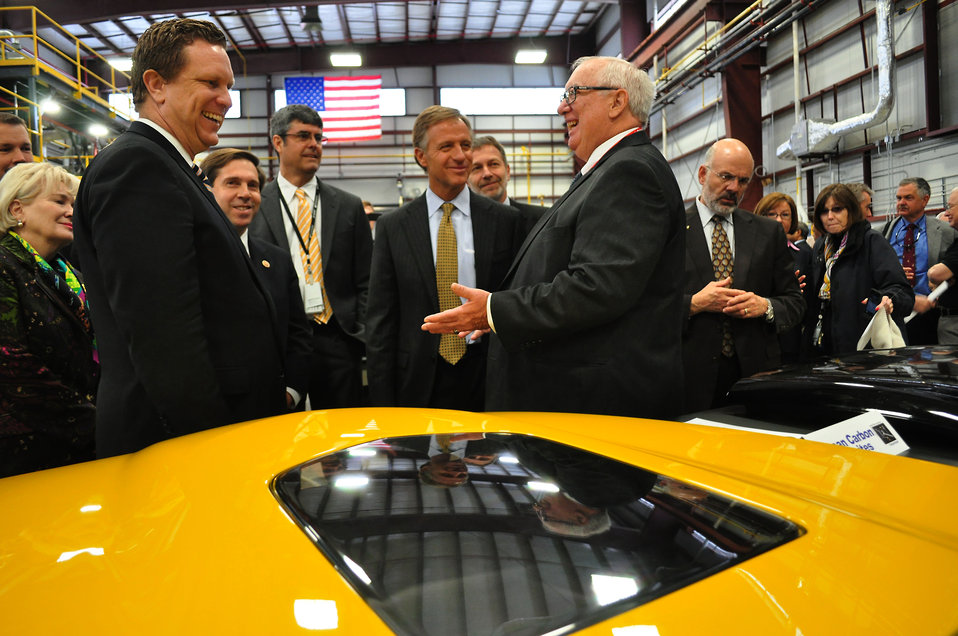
Carbon Fiber Technology Facilty Open House Oak Ridge Tennessee

13-025 DOE photo Lynn Freeny